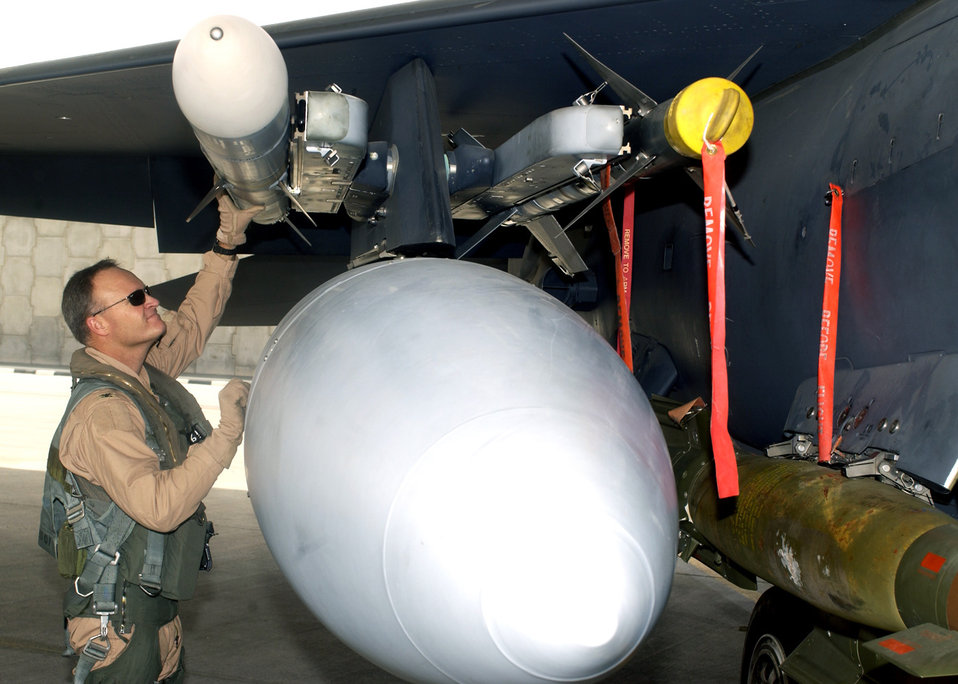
Preparing to strike

SOUTHWEST ASIA -- Col. James Brown inspects an F-15E Strike Eagle at a forward-deployed location before a mission. Colonel Brown is the 379th Expeditionary Operations Group commander.